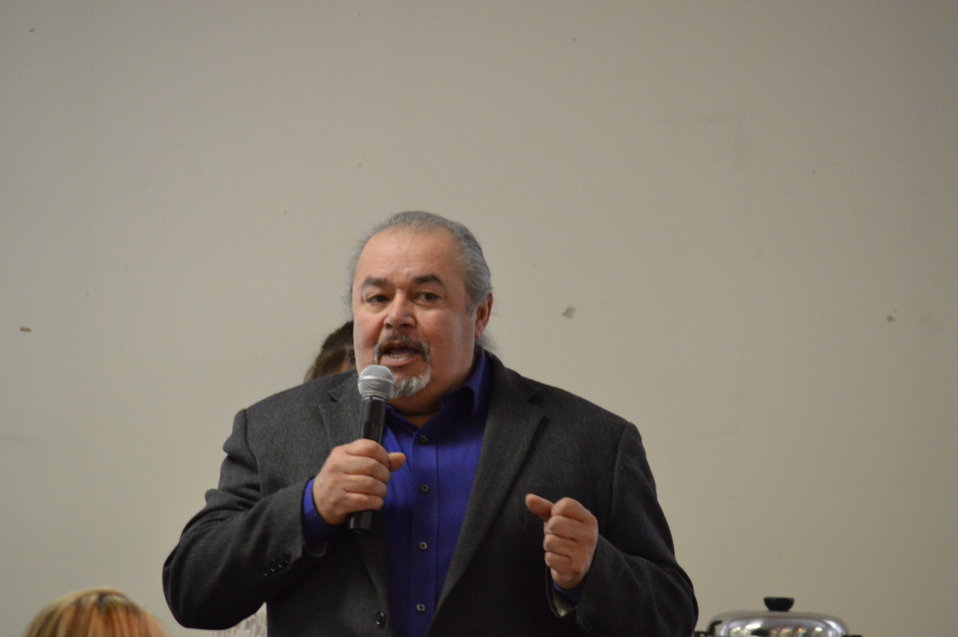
Eagle Summit III in Denver, Colorado on March 20, 2014 at the Rocky Mountain Arsenal National Wildlife Refuge.